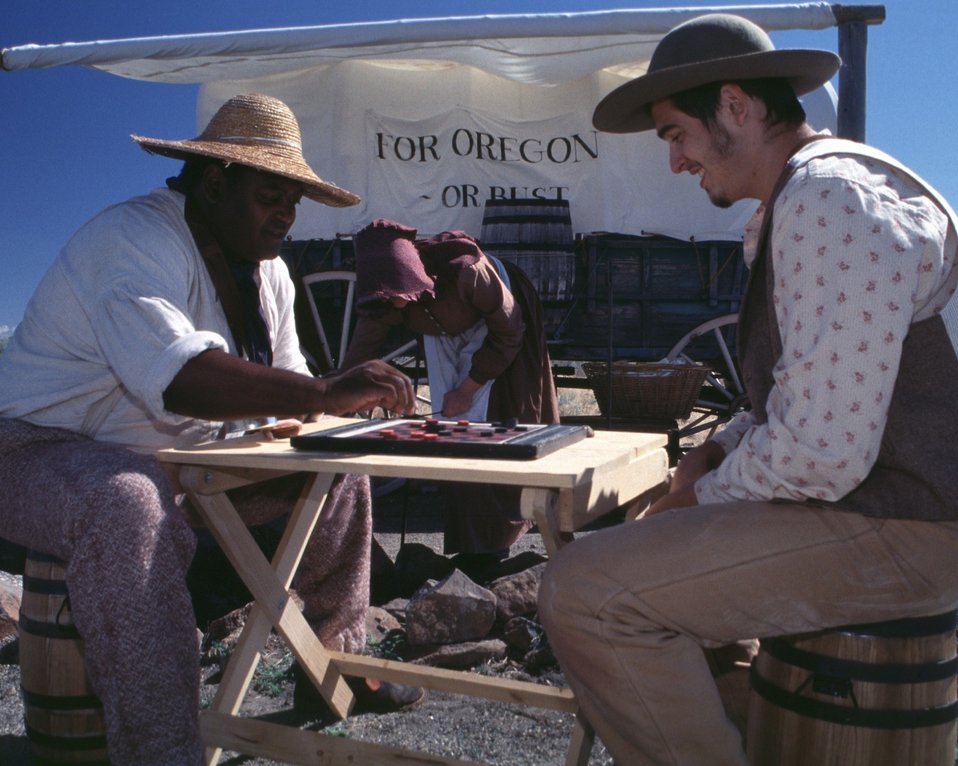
Dylan Prichertt, Rebecca Crow, and Brandon Kames portrqay oregon Trail Pioneers at a wagon encampment.